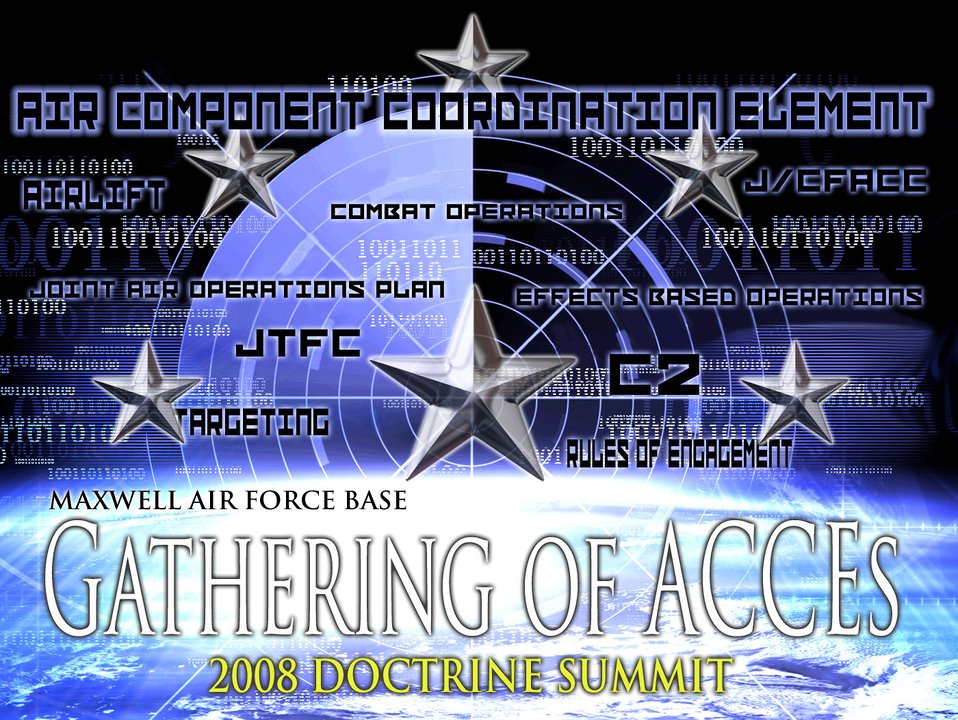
Summit solidifies operational, strategic doctrine

More than a dozen active duty and retired general officers attended the Gathering of Air Component Coordination Elements Doctrine Summit Jan. 23 and 24 at Maxwell Air Force Base, Ala. They refined Air Force and joint doctrine relating to a key advisory and liasion position in joint warfighting operations. Air Force generals who have held this position in humanitarian and combat operations ranging from Hurricane Katrina relief to Operation Iraqi Freedom shared their experiences in an attempt to clarify duty roles and responsibilities, training requirements and other areas pertaining to the position that was created in 2001 during Operation Enduring Freedom.